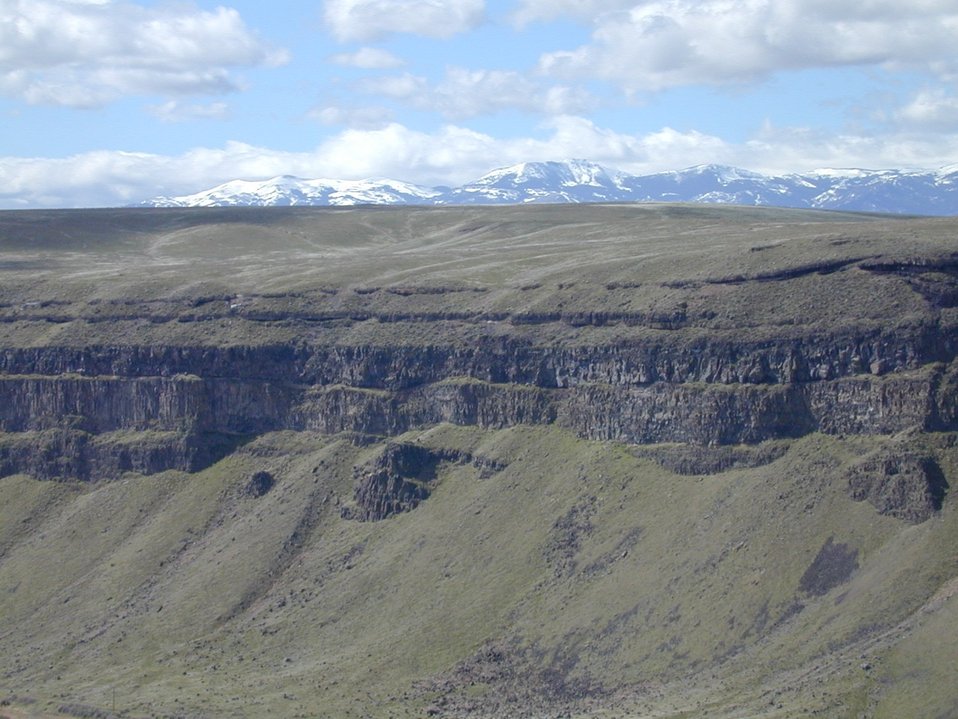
Scenic Snake River Birds of Prey National Conservation Area Lower Snake River District LSRD Snake River Canyon